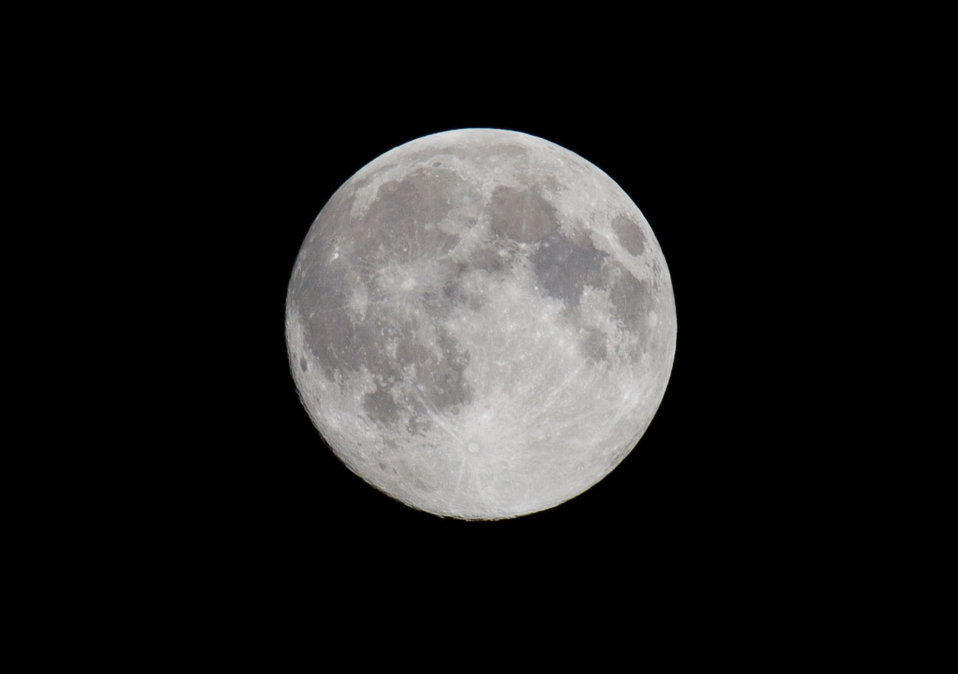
Full moon

Photo of a full moon.